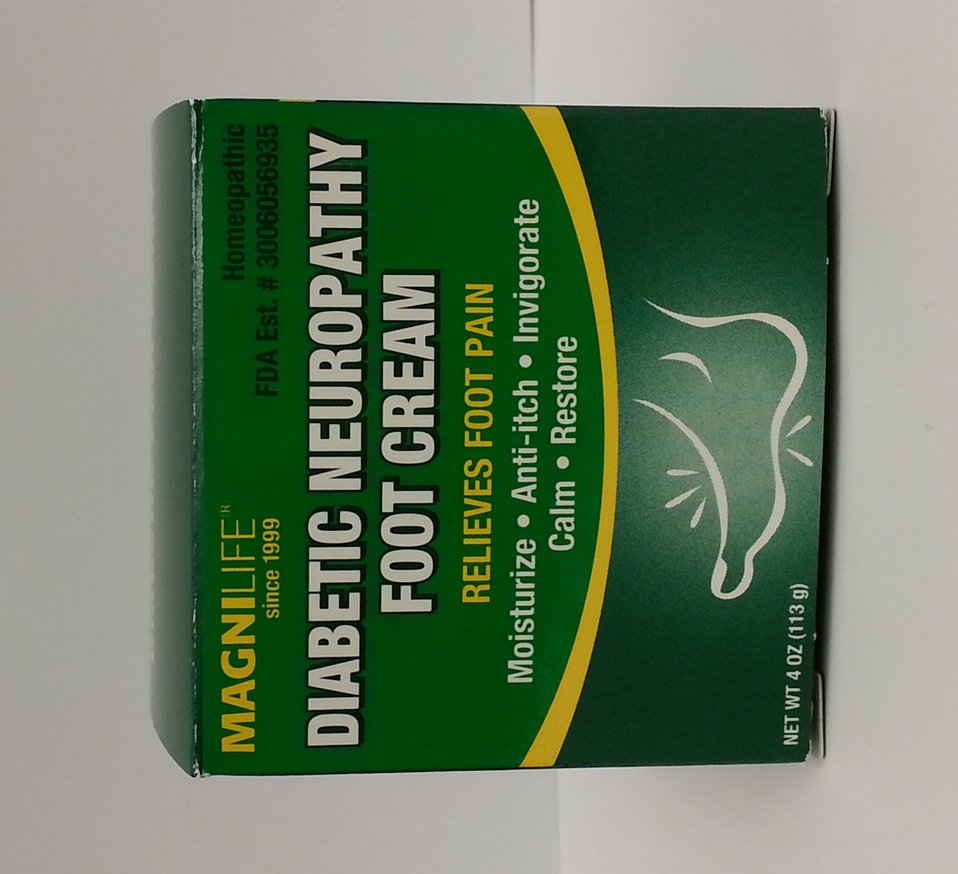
Illegally Sold Diabetes Treatments - Magnilife Diabetic Neuropathy Foot Cream

This product is an illegally sold homeopathic drug. FDA warns consumers to avoid illegally sold and potentially unsafe products sold as treatments for diabetes.